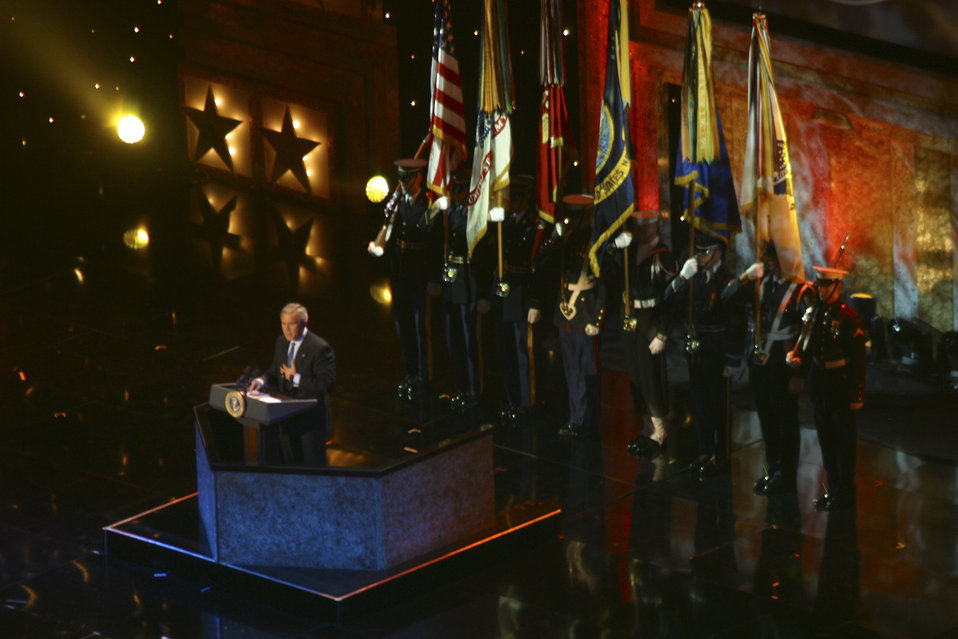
Musicians, celebrities entertain those who serve

WASHINGTON -- President George W. Bush speaks to more than 7,500 servicemembers during a